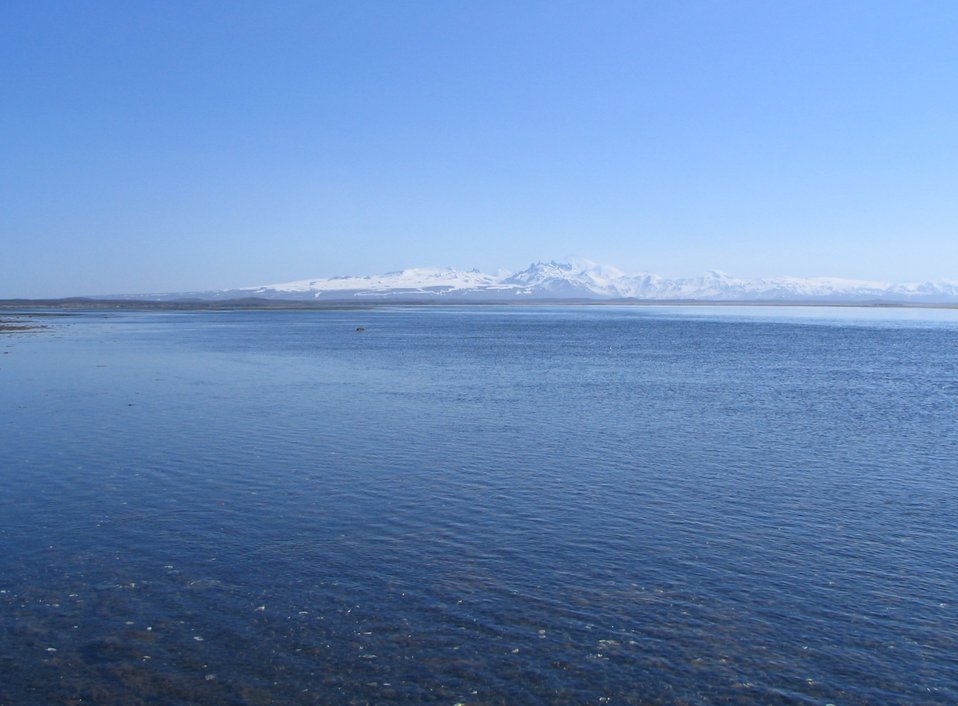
Kinzarof Lagoon, Izembek National Wildlife Refuge